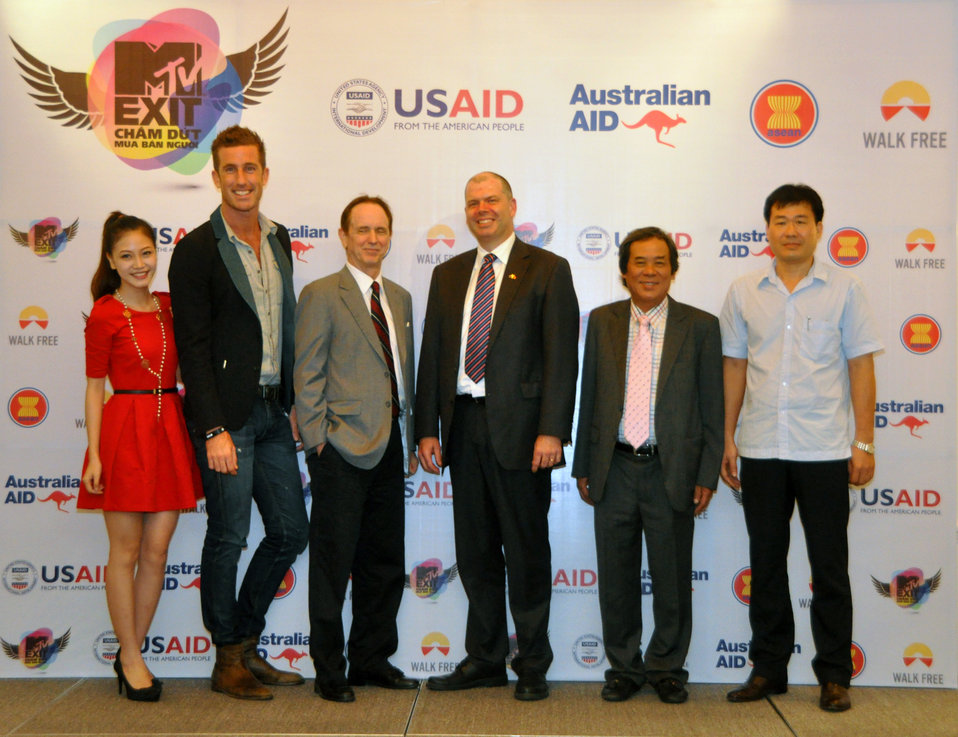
USAID joins MTVExit to launch documentary and awareness campaign against human trafficking